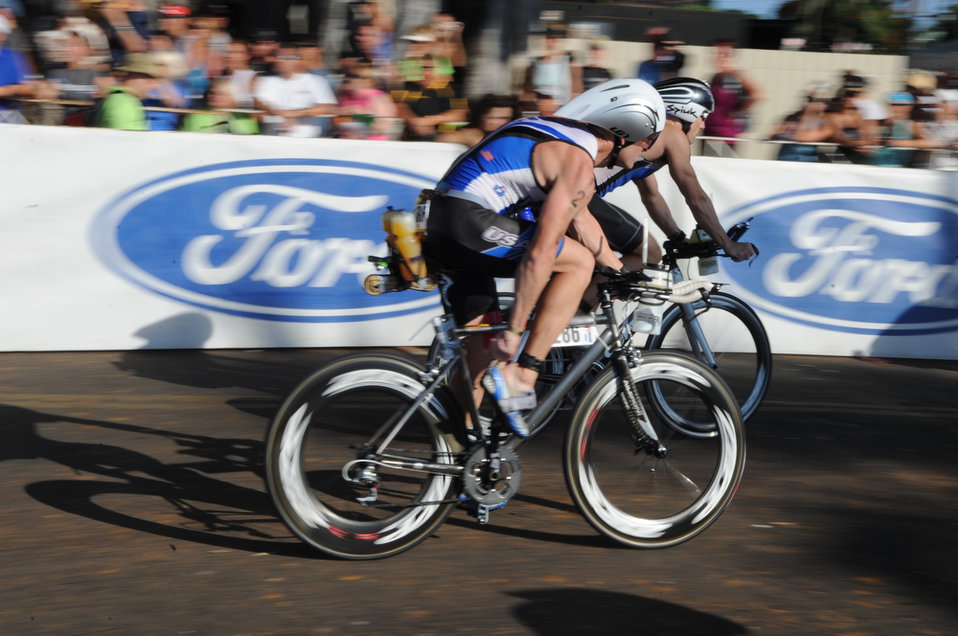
2010 Ironman World Championship

Maj. Scott Poteet adjusts his shoe as he speeds by the crowd after transitioning from the 2.4-mile swim to the 112-mile bike race while competing in the 2010 Ironman World Championship Oct. 9, 2010, at Kona, Hawaii. Major Poteet is assigned to the U.S. Air Force Academy in Colorado Springs, Colo. He finished with an overall time of 9:39:05.